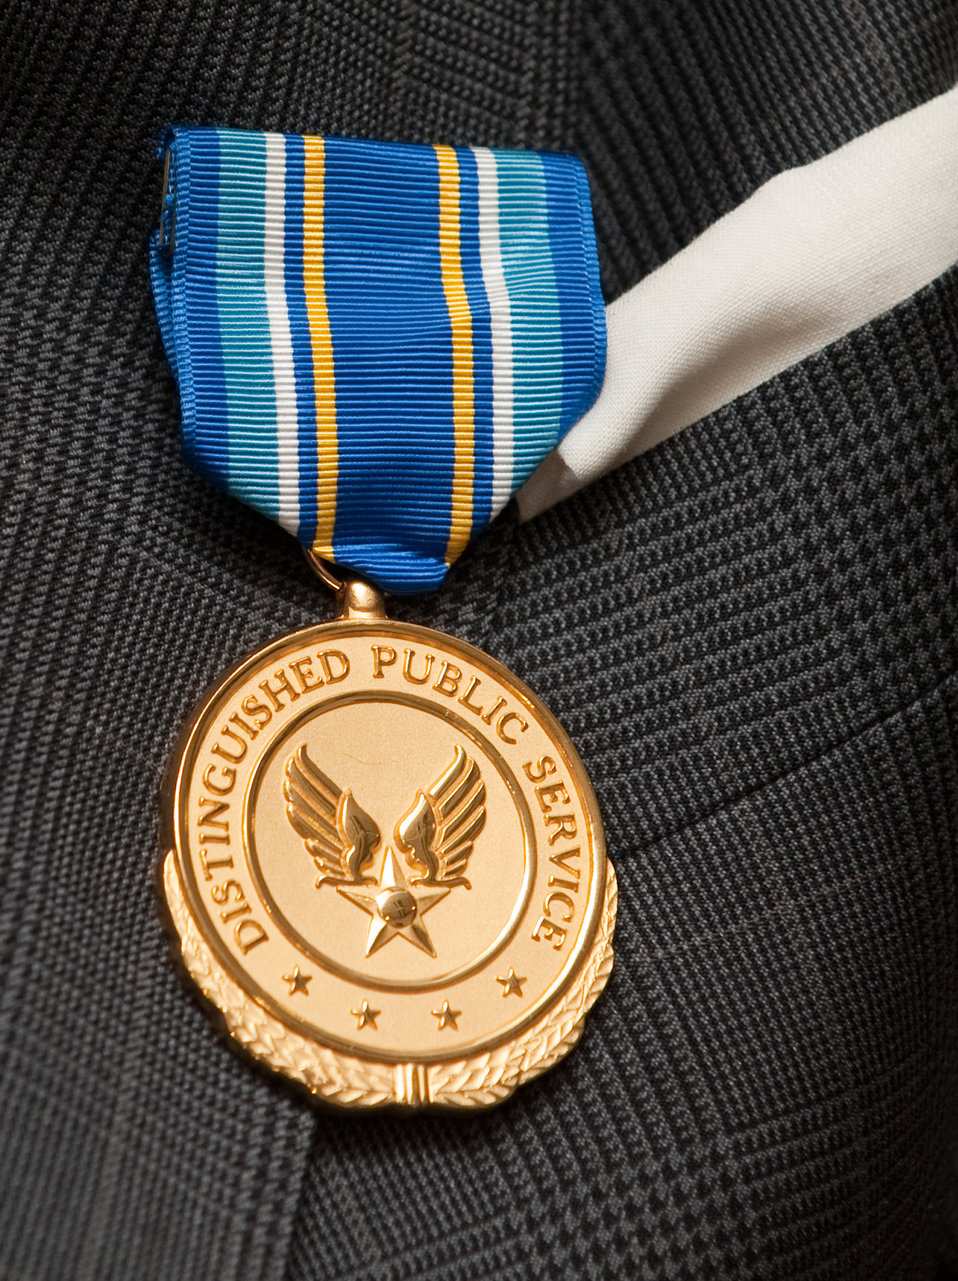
Air Force Week New York City Public Service Award

The Air Force Public Service medal awarded to Mr. Chester Burger following the Air Force Week New York City proclamation ceremony on the USS Intrepid on Aug. 24, 2010. The event at the Intrepid Sea, Air & Space Museum was highlighted by a six-ship flyover by the USAF Thunderbirds. The Honorable Michael Donley, Secretary of the Air Force attended, along with General Raymond Johns, Commander of Air Mobility Command. The Police Commissioner of the City of New York, the Honorable Raymond Kelly, represented NYC. Mr. Greg Kelly of